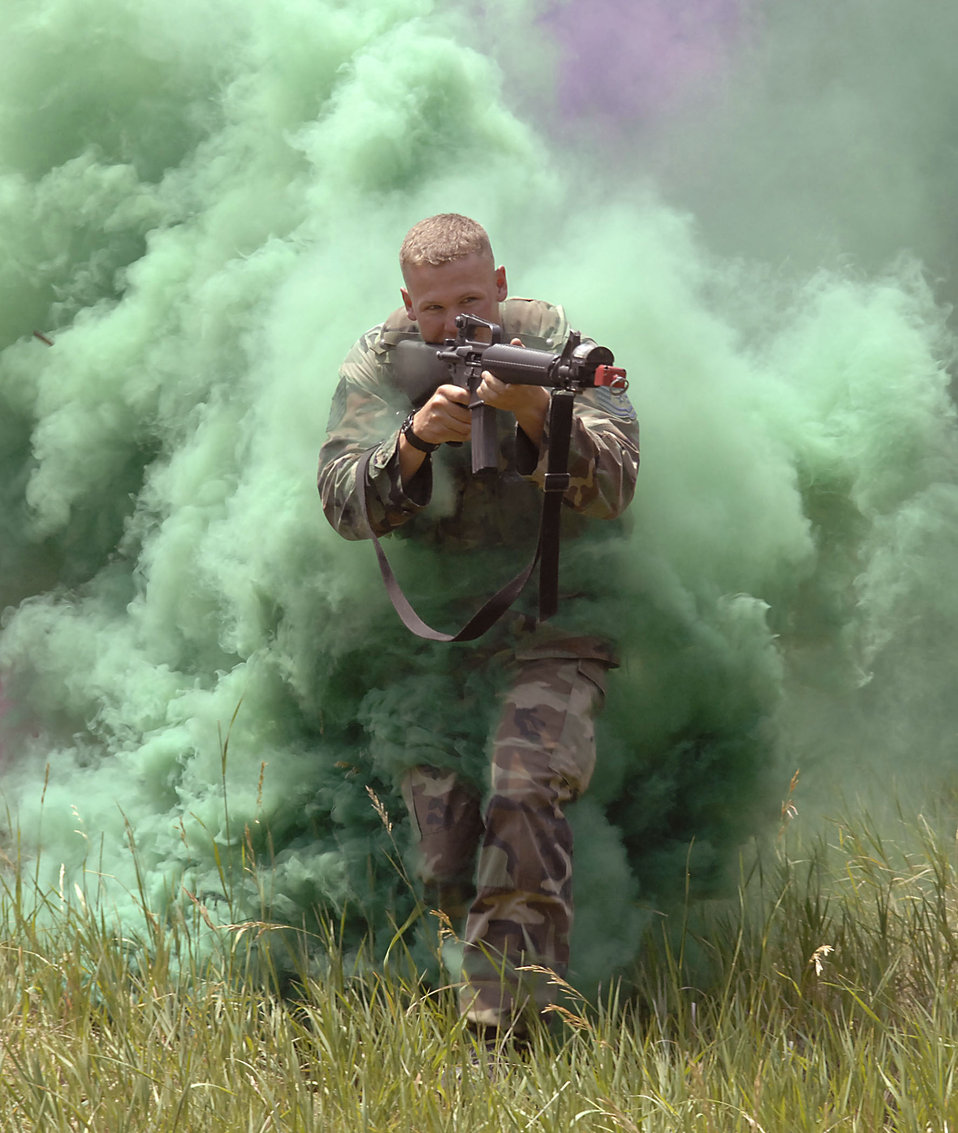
Global Engagement teaches leadership, base deployment

Tech. Sgt. Kevin Akers runs through cover smoke while attacking defensive firing positions manned by U.S. Air Force Academy cadets during the Global Engagement course July 11 at the Academy in Colorado. The purpose of Global Engagement is to lay the foundation of attitudes, knowledge and skills necessary to lead, fight, and win in a dynamic and diverse global environment. Sergeant Akers is a security forces instructor from Moody Air Force Base, Ga.